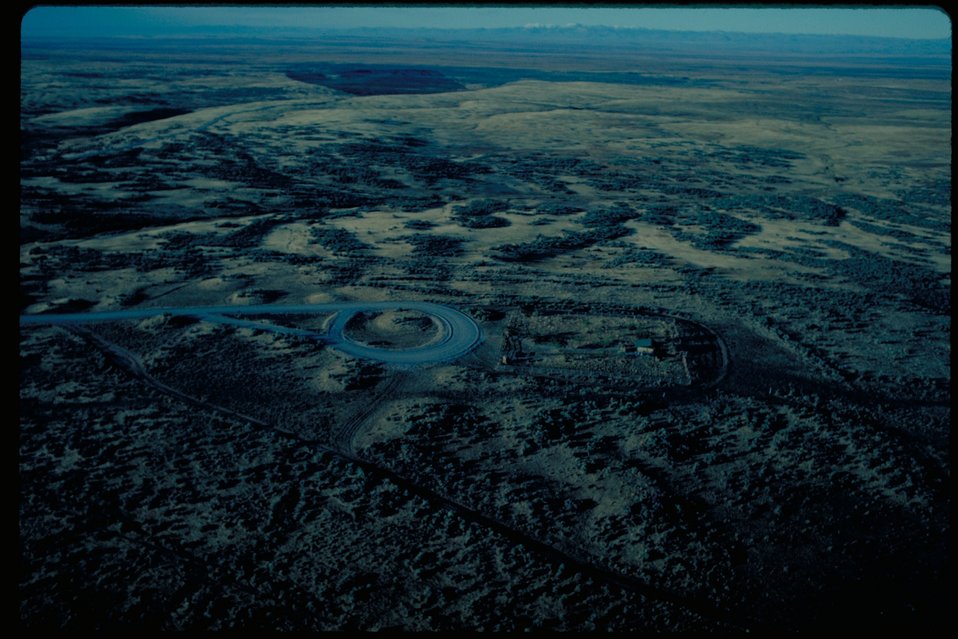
Oregon Trail Bonneville Point Lower Snake River District